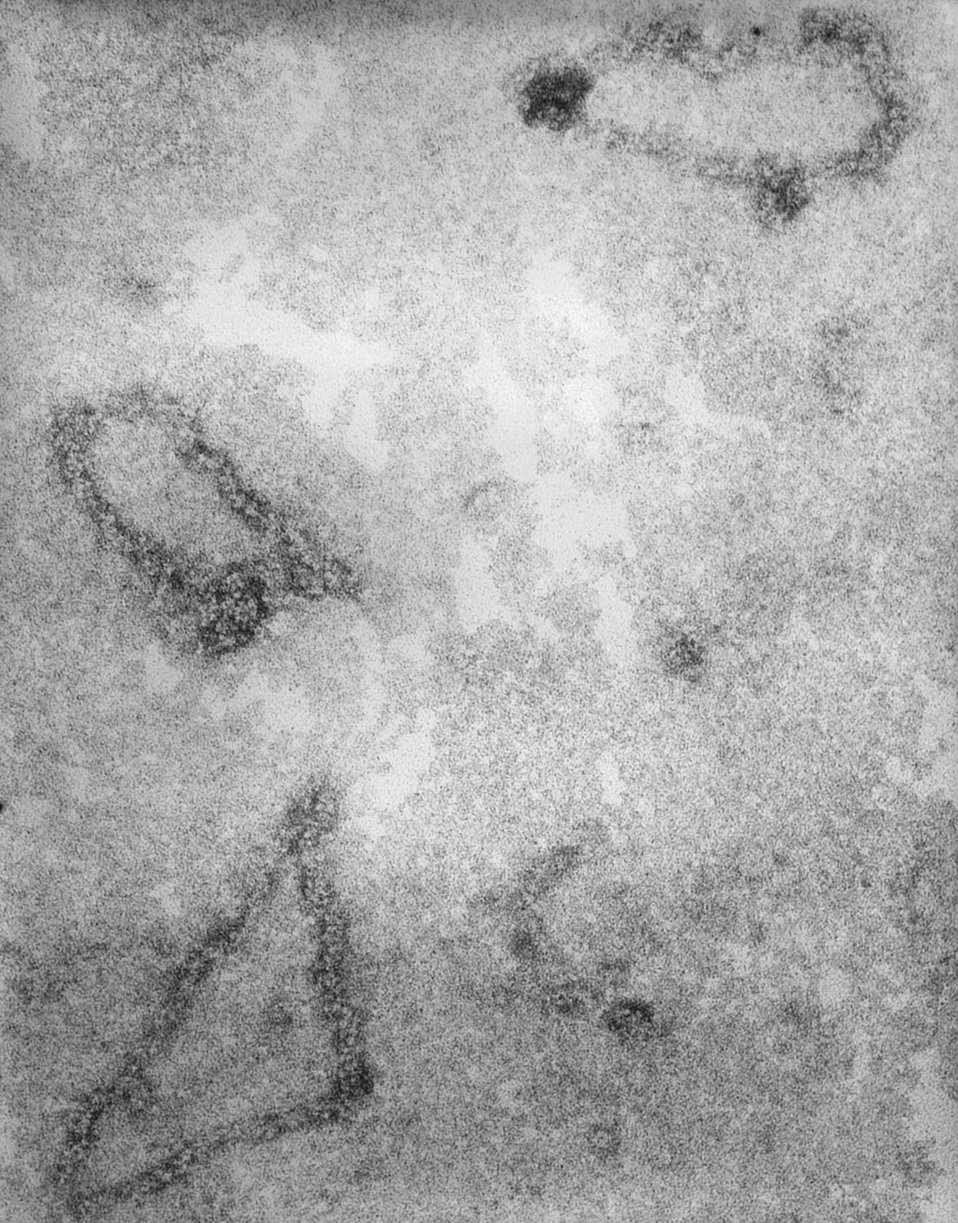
This negatively-stained transmission electron micrograph (TEM) revealed the presence of La Crosse (LAC) encephalitis virus ribonucleoprotein particles (RNP). LAC virus is a member of the Bunyaviridae virus family, California serogroup. This is an arbovorus, which means that transmission occurs through the bite of an infected arthropod, which in this case, is the treehole mosquito, Aedes triseriatus. LAC can also be transmitted through the bite of infected vertebrates including chipmunks and squirrels.